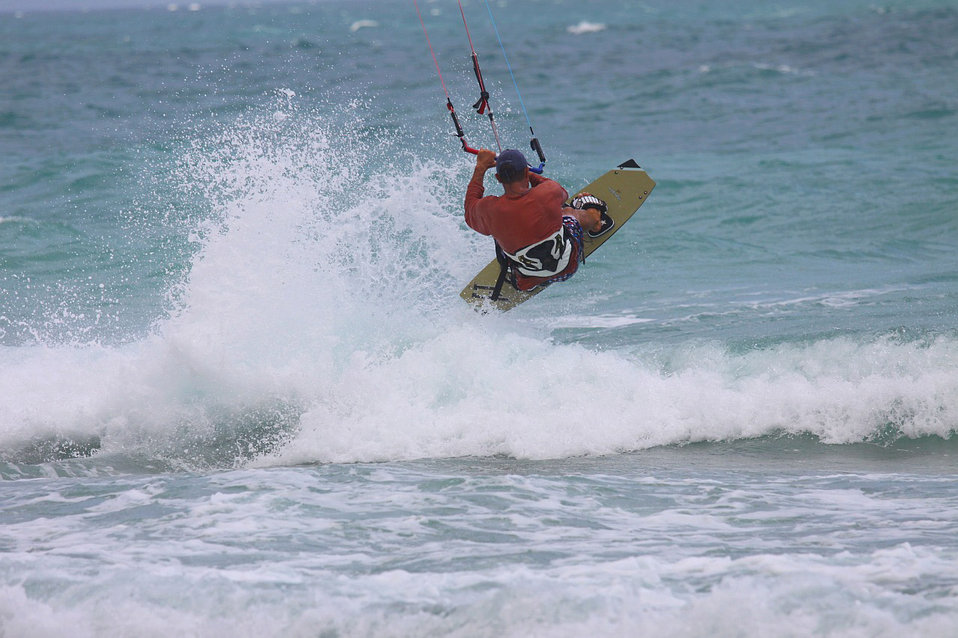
Fun

Wave jumping on really hot day.